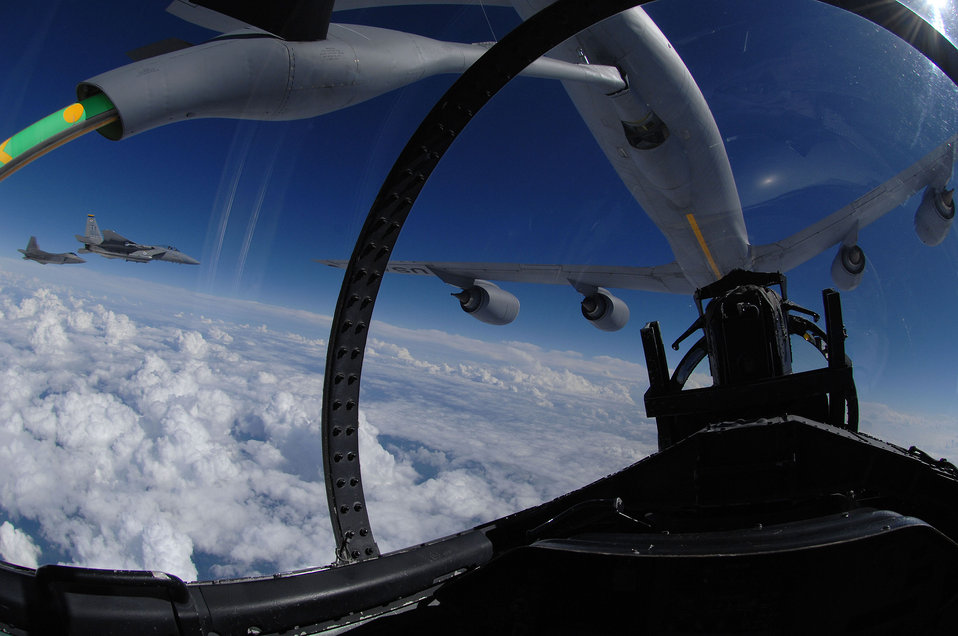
A view over the canopy

The refueling boom from a KC-135 Stratotanker arches over an F-15 Eagle as it refuels the aircraft Sept. 22 over eastern Florida. An F-22 Raptor and another F-15 Eagle from Tyndall AFB, Fla., are part of the training mission with the Mississippi Air National Guard.